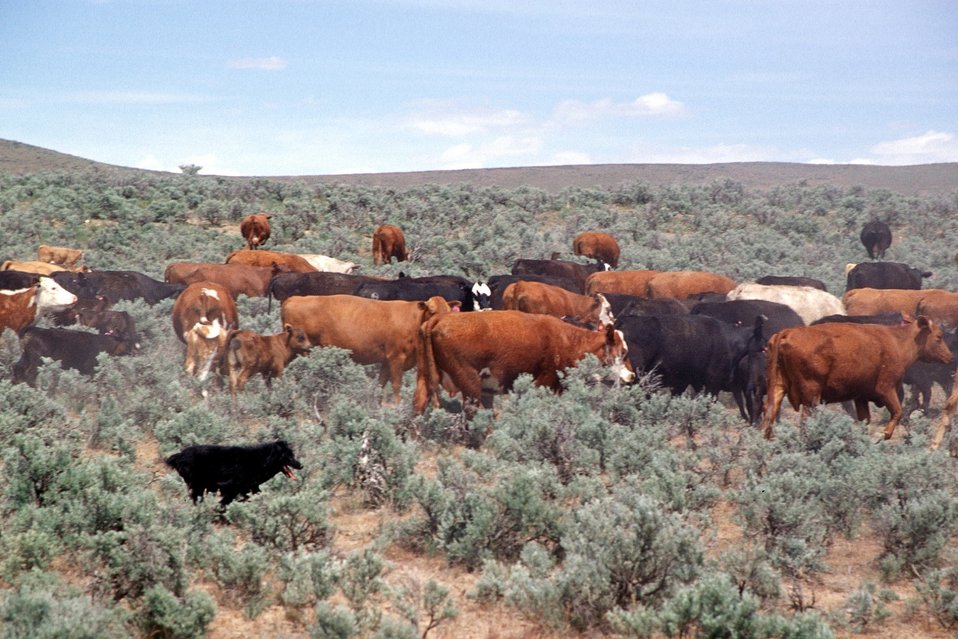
Immigrant Flats, Baker City RA. Black dog and cattle.